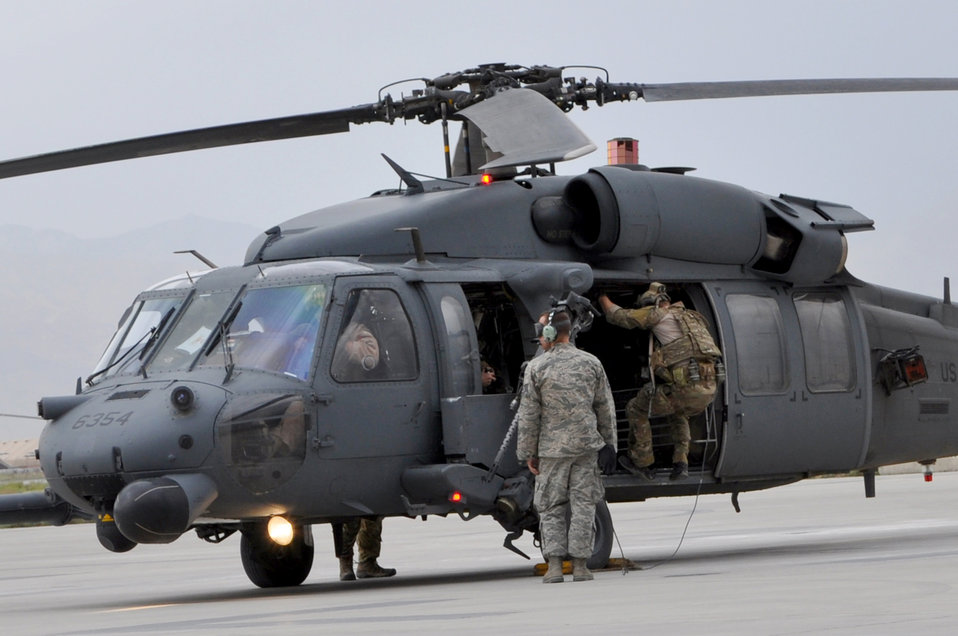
Pave Hawk rescue mission

A pararescueman climbs aboard an HH-60G Pave Hawk helicopter June 11, 2011, at Bagram Airfield, Afghanistan, after receiving an alert call.